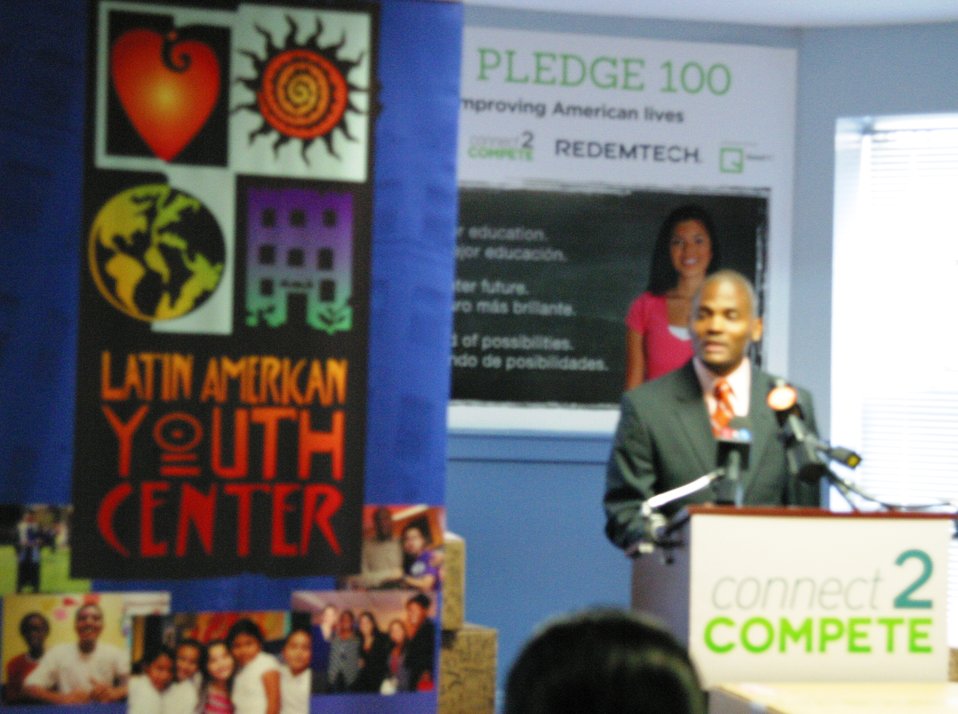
Connect 2 Compete: LULAC 8.7.12

Elliott Gaskins, Chief Development Officer, LAYC speaking at the League of United Latin American Citizens (LULAC), and the Latin American Youth Center (LAYC) to announce the launch of a nationwide computer recycling and donation effort to support C2C’s efforts to close the digital divide.